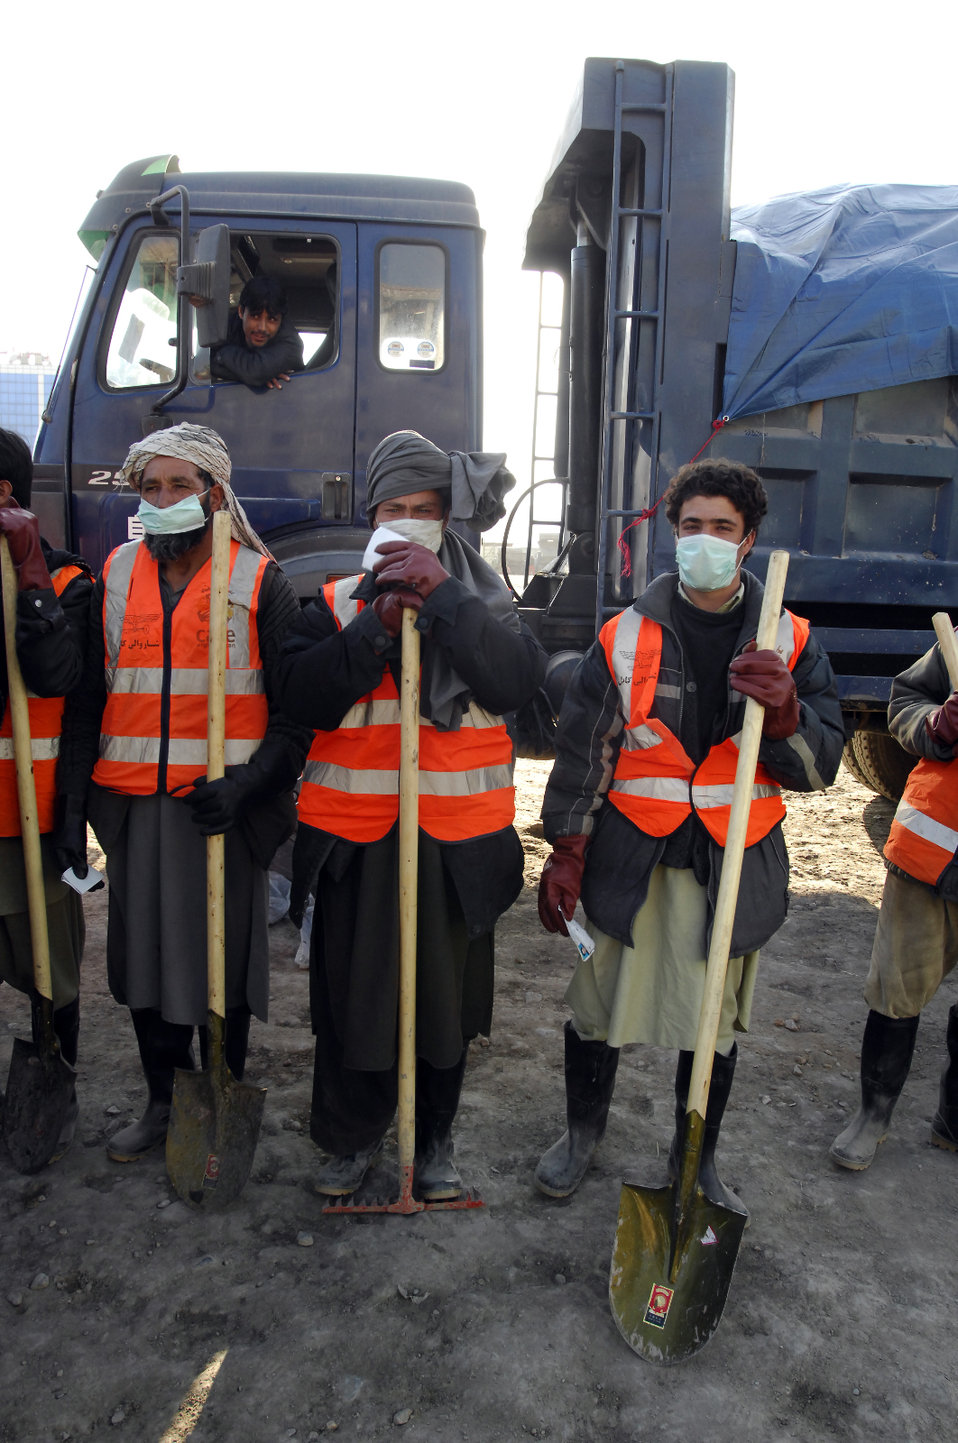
Care99